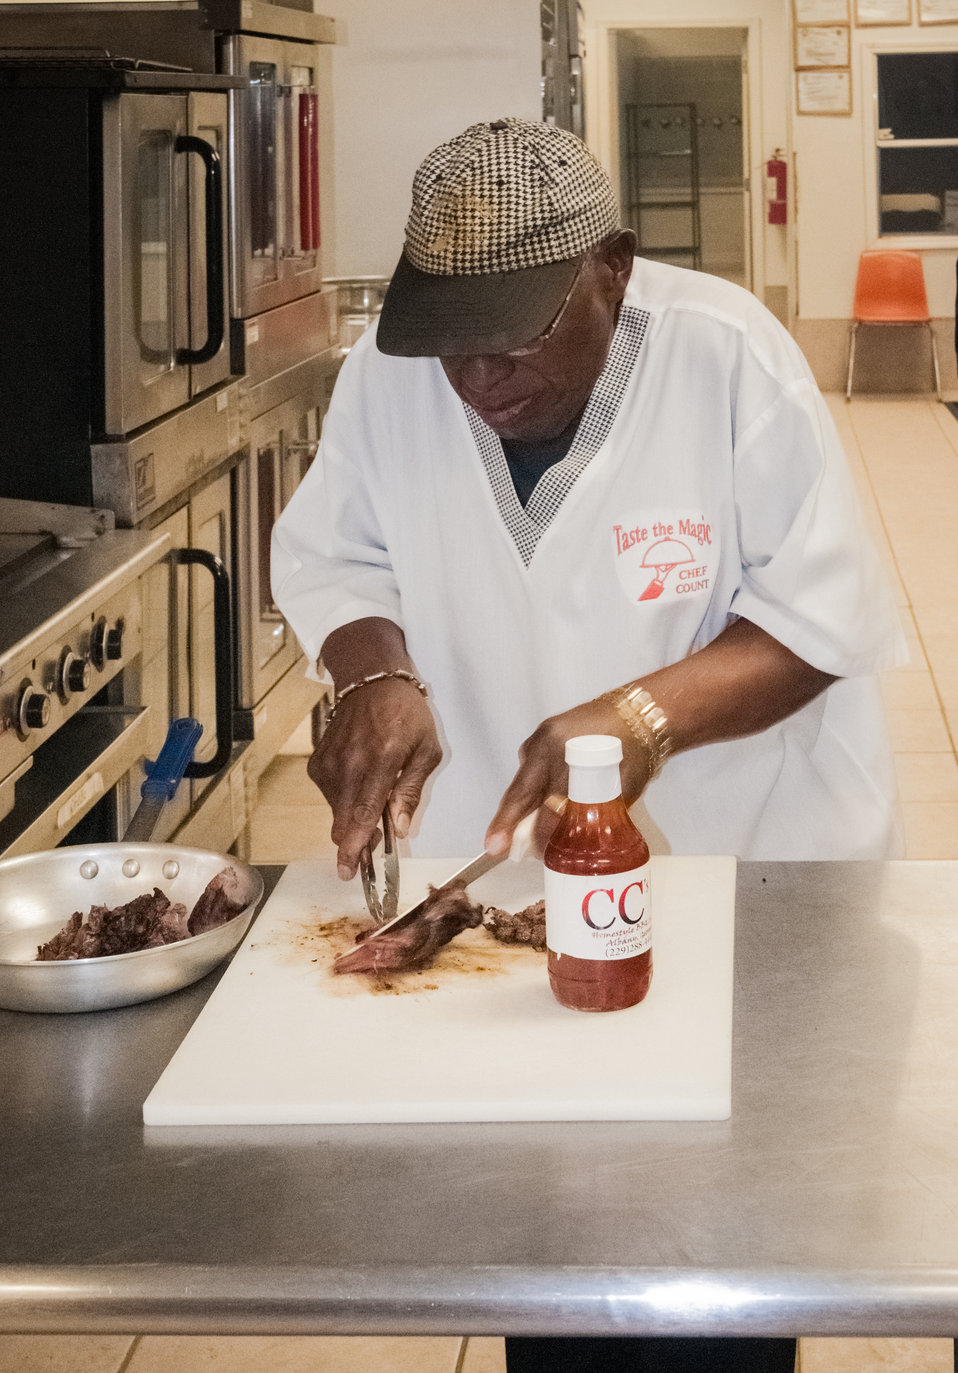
Chef Count Lofton prepares beef brisket in the incubator kitchen at the East Baker Historical Society Community Center in Newton, Baker County, GA on Mar. 7, 2013. The East Baker Historical Society Community Center secured a U.S. Department of Agriculture (USDA) Rural Development (RD) Community Facilities (CF) Loan for the kitchen that enabled residents to prepare catered meals and to prepare and package food products. The USDA Strike Force Initiative has designated Baker County, GA as a Strike Force county selected to receive assistance to relieve persistent poverty in historically high-poverty counties.